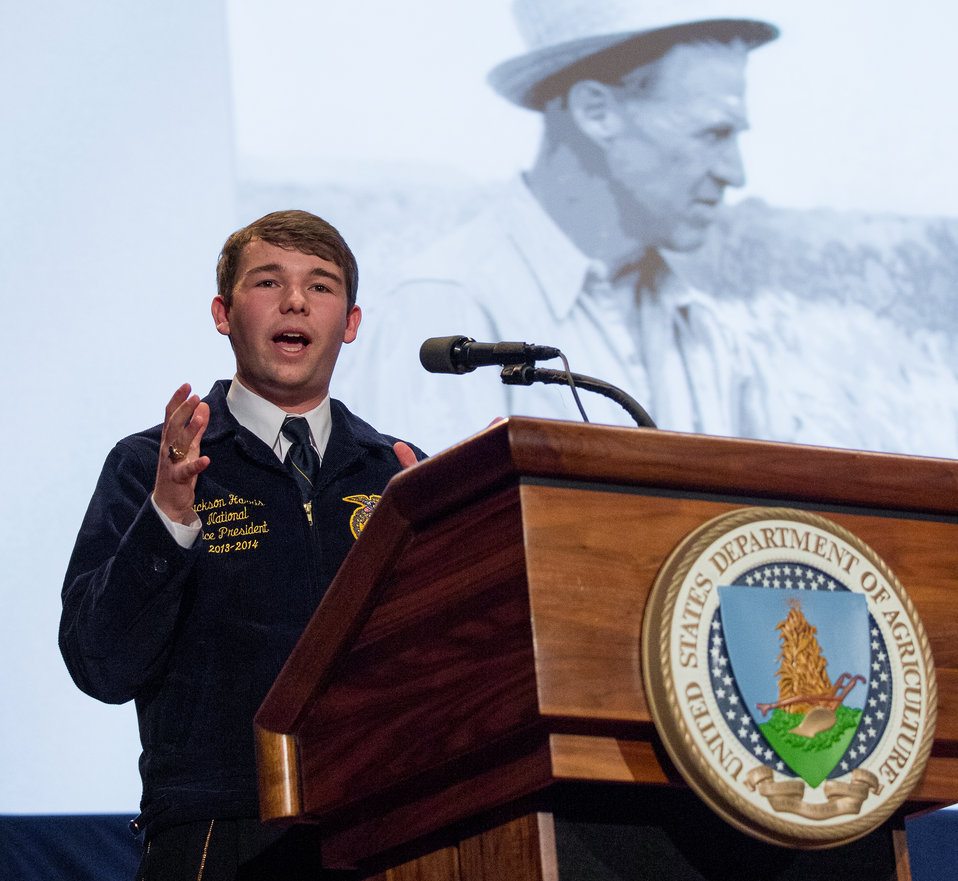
National FFA Southern Region Vice President Jackson Harris presents his work to help achieve Dr. Borlaug’s vision as the next generation of hunger fighters at the Borlaug Symposium commemorating the late Dr. Norman E. Borlaug's 100th Birthday hosted by the U. S. Department of Agriculture (USDA) in the Jefferson Auditorium of USDA in Washington, D.C. on Tuesday, Mar. 25, 2014. The symposium highlighted current efforts addressing global hunger.